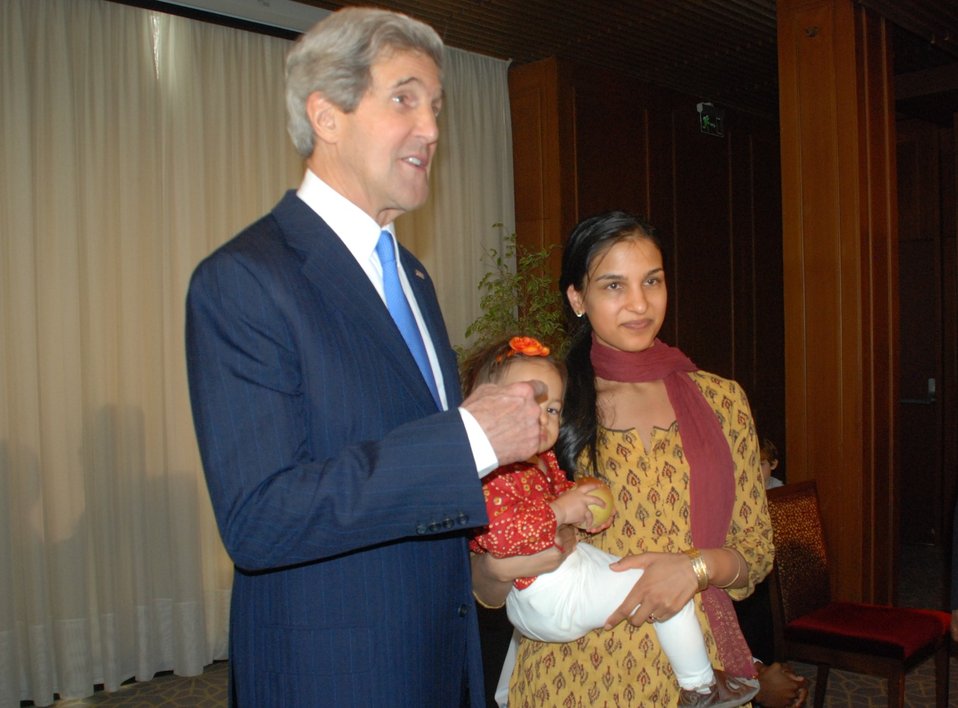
Secretary Kerry Meets With U.S. Mission Turkey Staff and Families

U.S. Secretary of State John Kerry meets with the staff and families of the U.S. Mission to Turkey in Istanbul, Turkey, April 7, 2013.